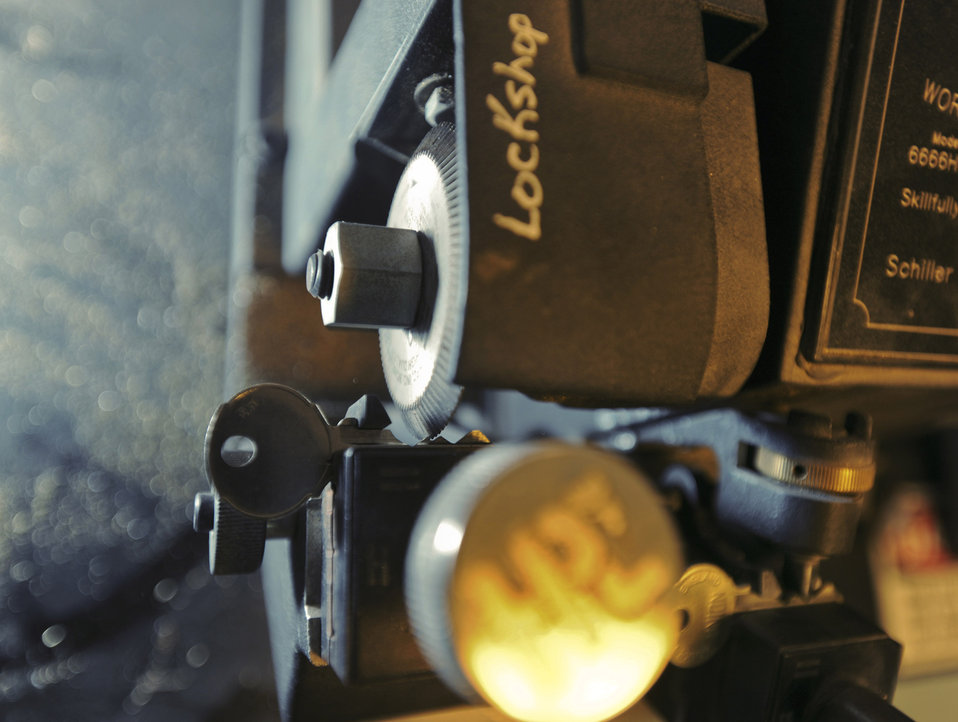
The key masters

An automatic key cutting machine clones a key Feb. 25 in the 379th Expeditionary Civil Engineer Squadron locksmith shop at an air base in Southwest Asia. The machine uses a feeler gauge to run along the original key's edge which tells the cutting wheel where to cut the blank in order to make an exact duplicate key.